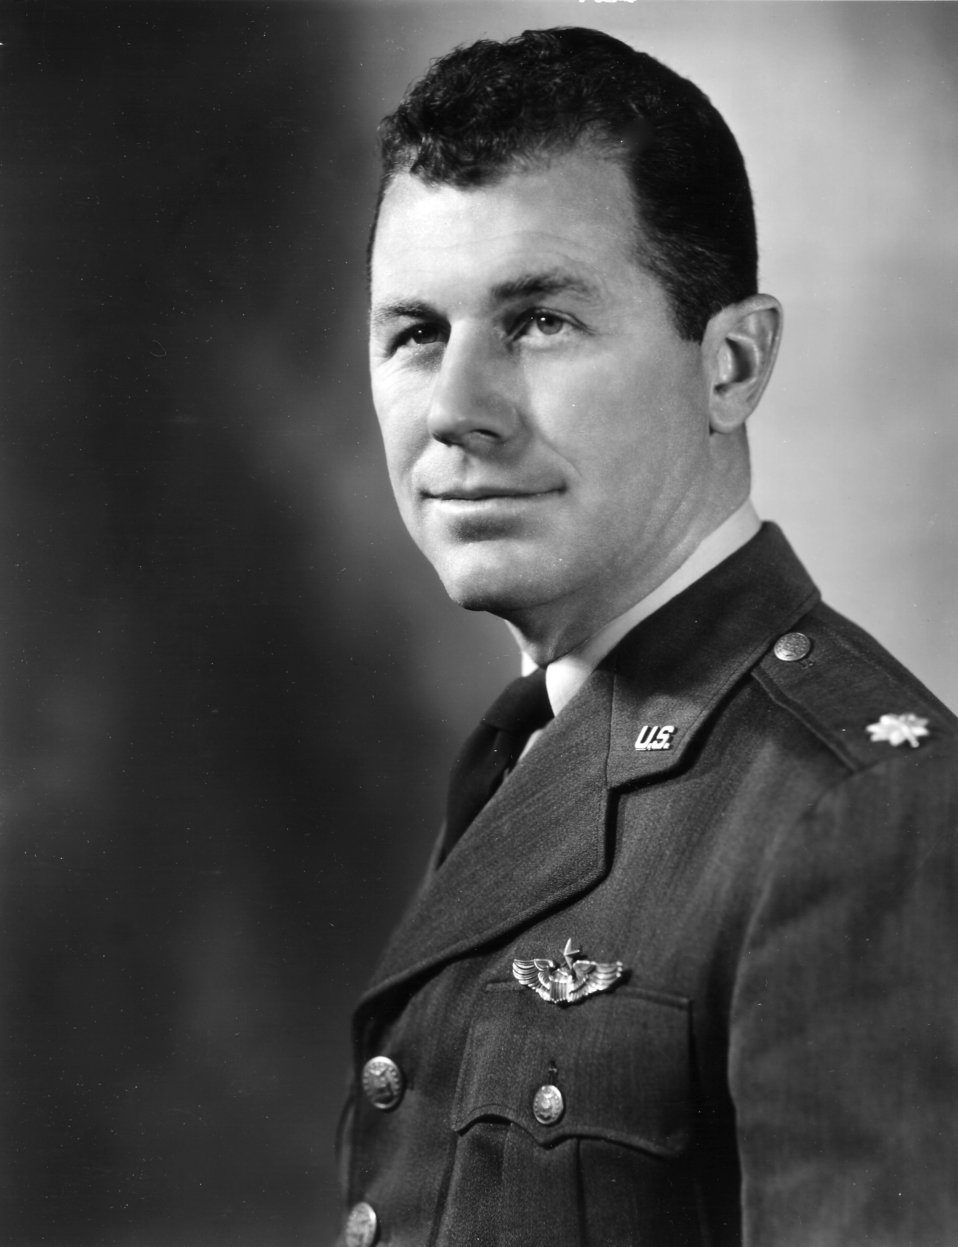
Charles E. Yeager

1940's -- Charles E. Yeager became the first man to fly faster than the speed of sound in level flight on October 14, 1947.